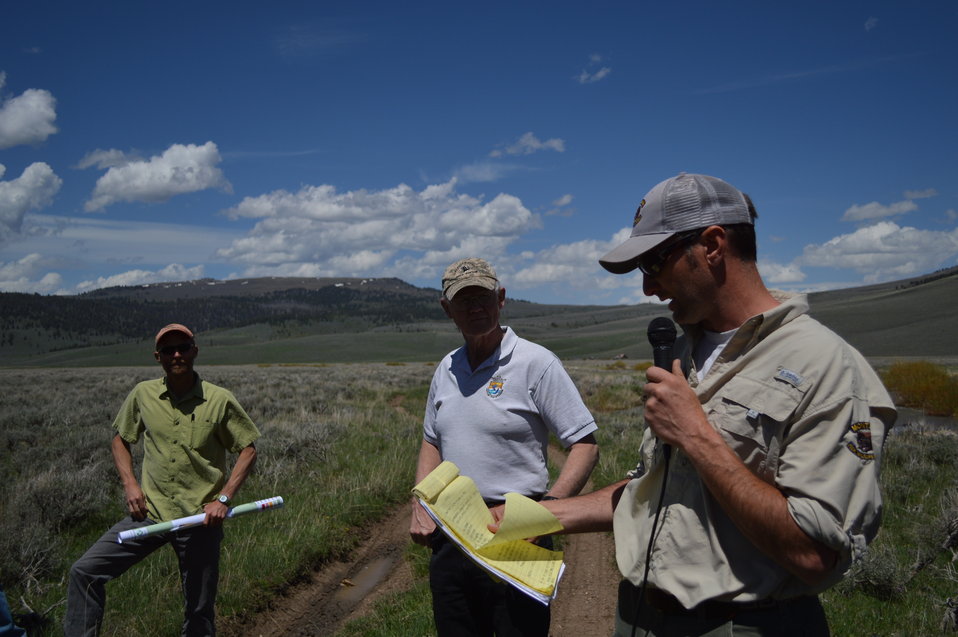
Regional Leadership Visit to Montana 2014